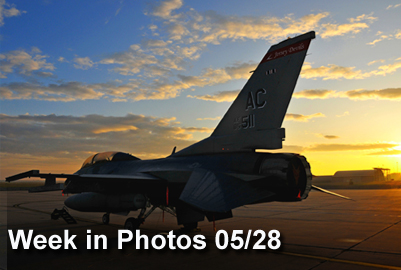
Week in Photos 5/28

Air Force Week in Photos for May 28, 2010, highlights photos from around the Air Force. In this photo by Staff Sgt. Matt Hecht, an F-16 Fighting Falcon assigned to the New Jersey Air National Guard's 177th Fighter Wing at Atlantic City International Airport sits on the flightline early in the morning May 20, 2010.